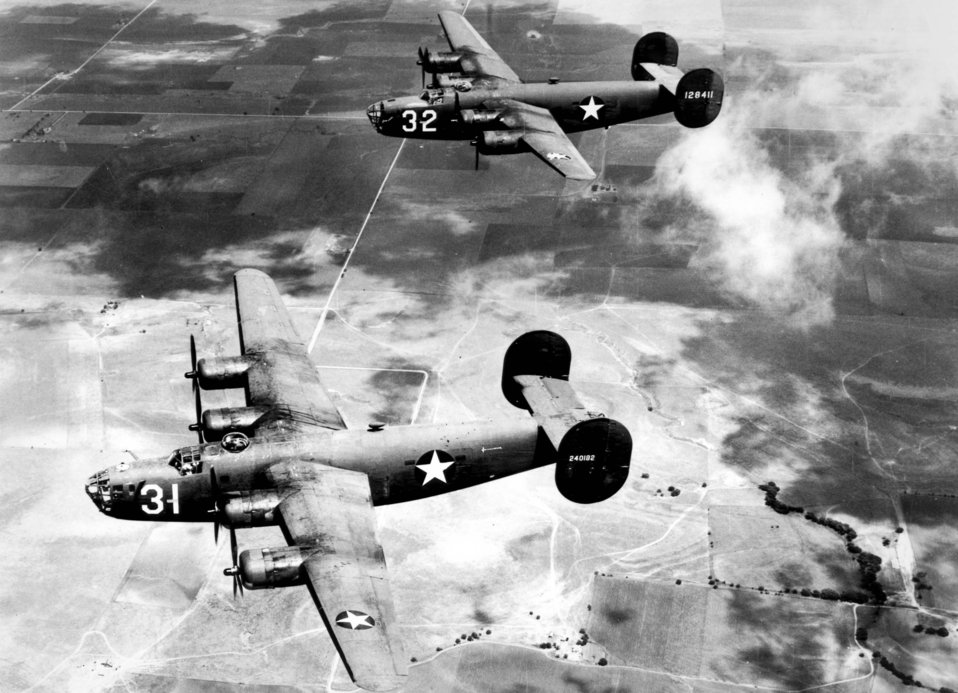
B-24

1940's -- The B-24